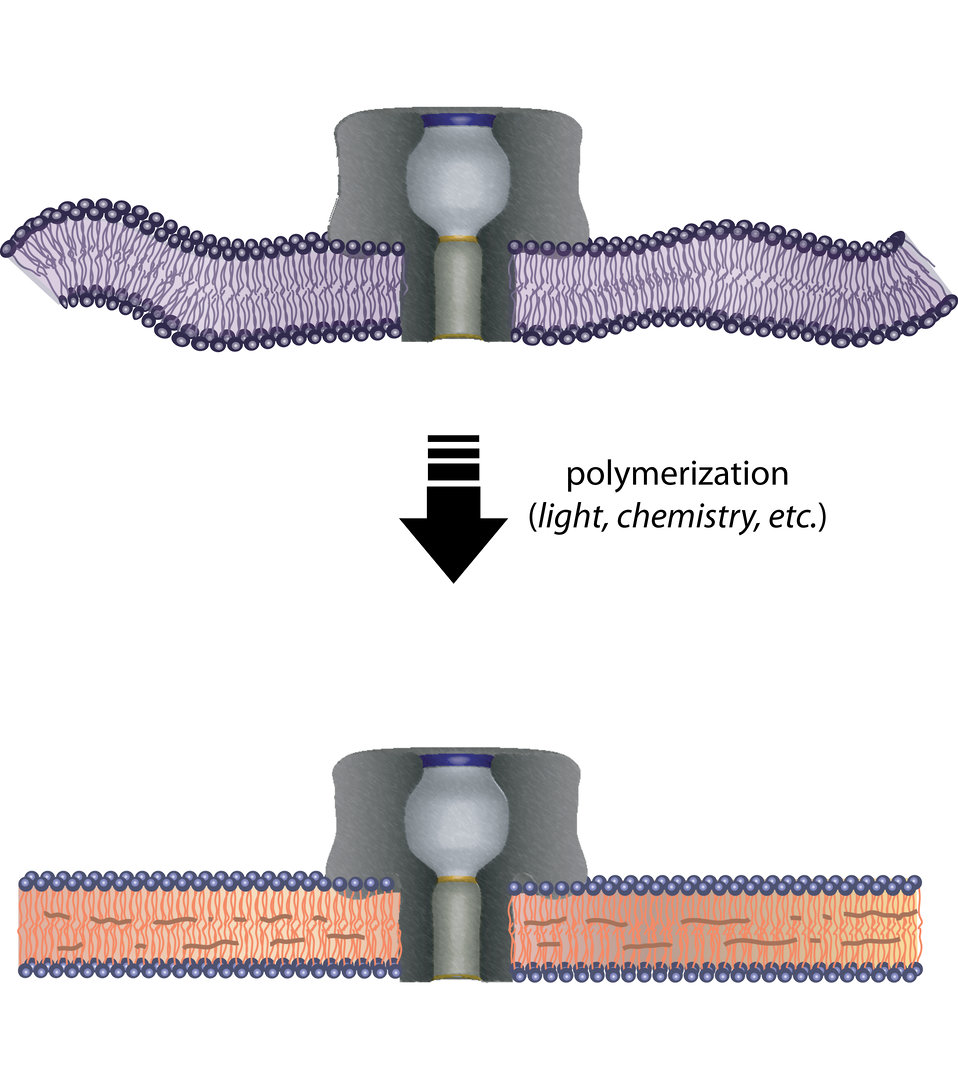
Nanopores

A recent NIST patent shows that nanopores, which may one day help doctors perform quick analysis of blood samples, are not harmed by the polymerization process that could help nanopores operate in biochips. Polymerization hardens and stabilizes the membrane surrounding the nanopores, both of which are beneficial effects.